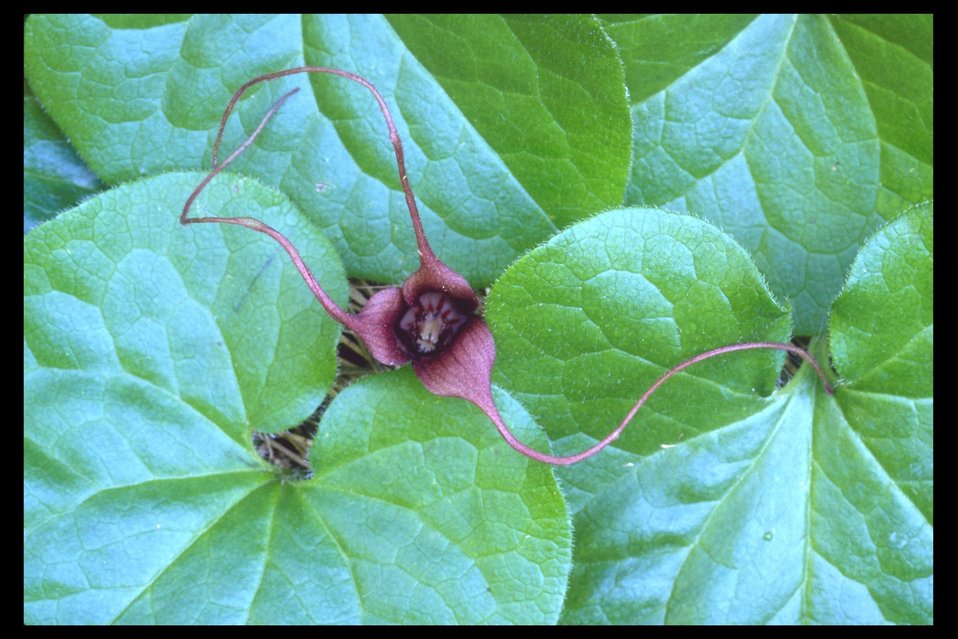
Close up with blossom of the Wild Ginger (Asarum caudatum) at Upper Trail Creek.